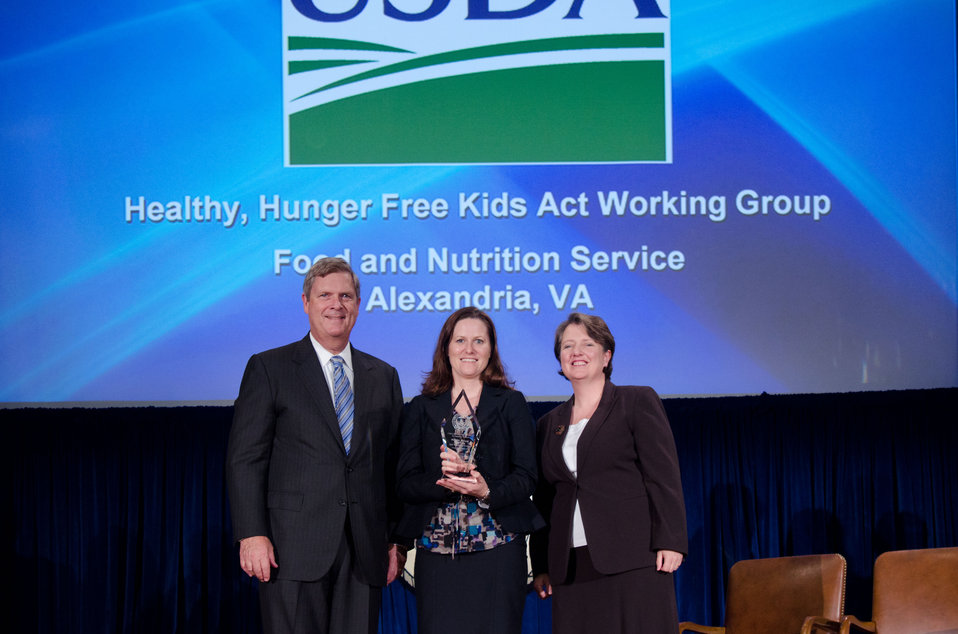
Agriculture Secretary Tom Vilsack (l) and Deputy Secretary Kathleen Merrigan (r), presents the
Ensuring That All Of America’s Children Have Access To Safe, Nutritious and Balanced Meals
Award to Healthy, Hunger Free Kids Act Working Group, Food and Nutrition Service, Alexandria, VA. Ronald Vogel, Group Leader. For sustained and outstanding efforts supporting the reauthorization of the Child Nutrition and WIC Programs, resulting in the enactment of the Healthy, Hunger-Free Kids Act of 2010. On Wednesday, September 14, 2011 in the Jefferson Auditorium at the US Department of Agriculture in Washington, DC.